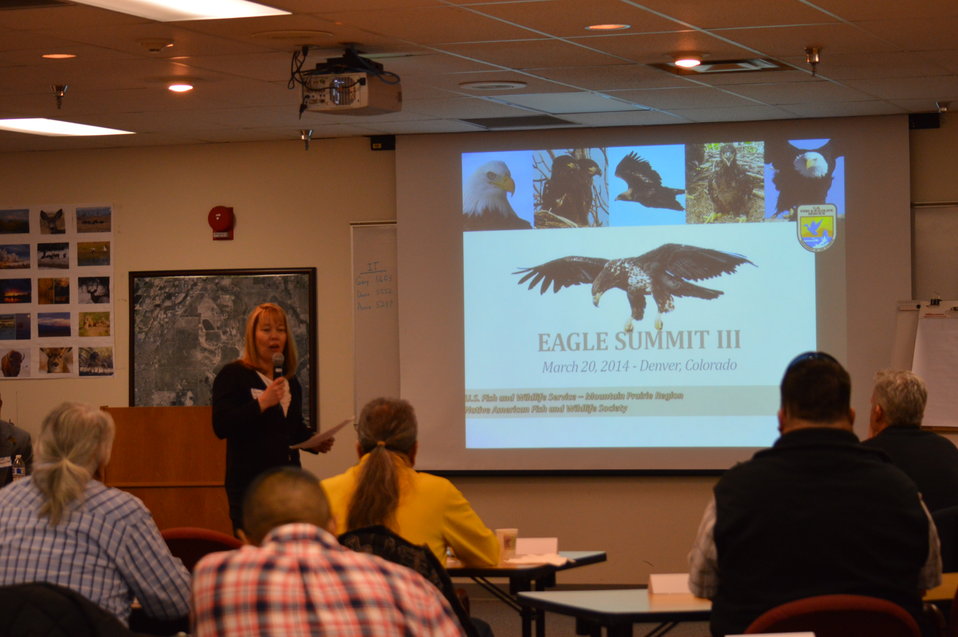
Eagle Summit III Welcome

Noreen Walsh (Regional Director) welcomes attendees to the Eagle Summit III in Denver, Colorado on March 20, 2014 at the Rocky Mountain Arsenal National Wildlife Refuge.